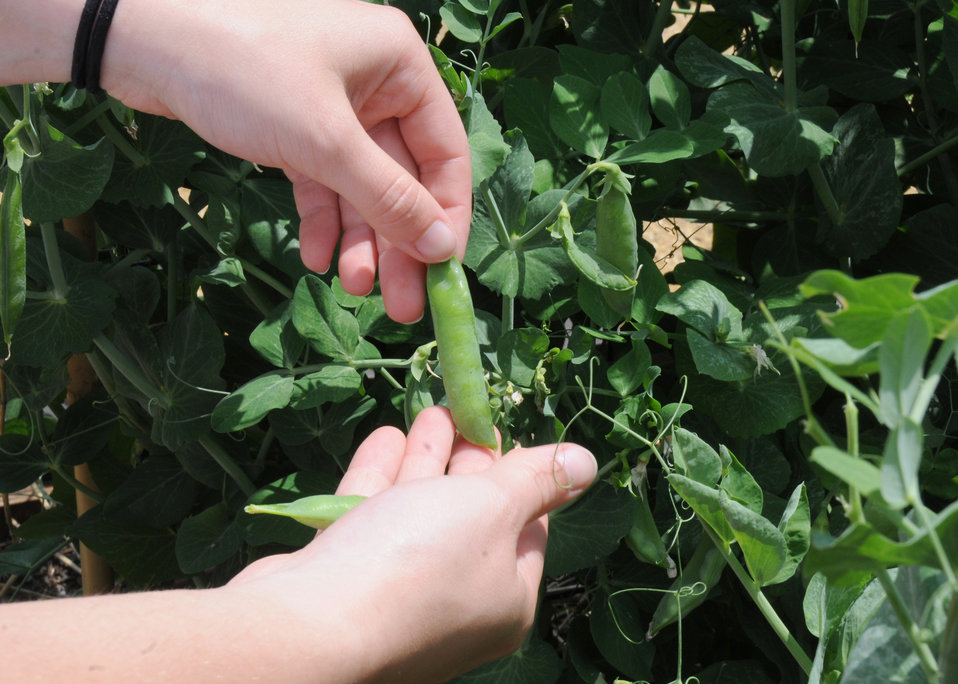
A U. S. Department of Agriculture (USDA) employee holds a shell pea ready for picking at the first harvest of vegetables at the USDA People’s Garden in Washington, DC, on Friday, May 28, 2010. All vegetables harvested are donated to local area food banks. USDA photo 10di1384-09.